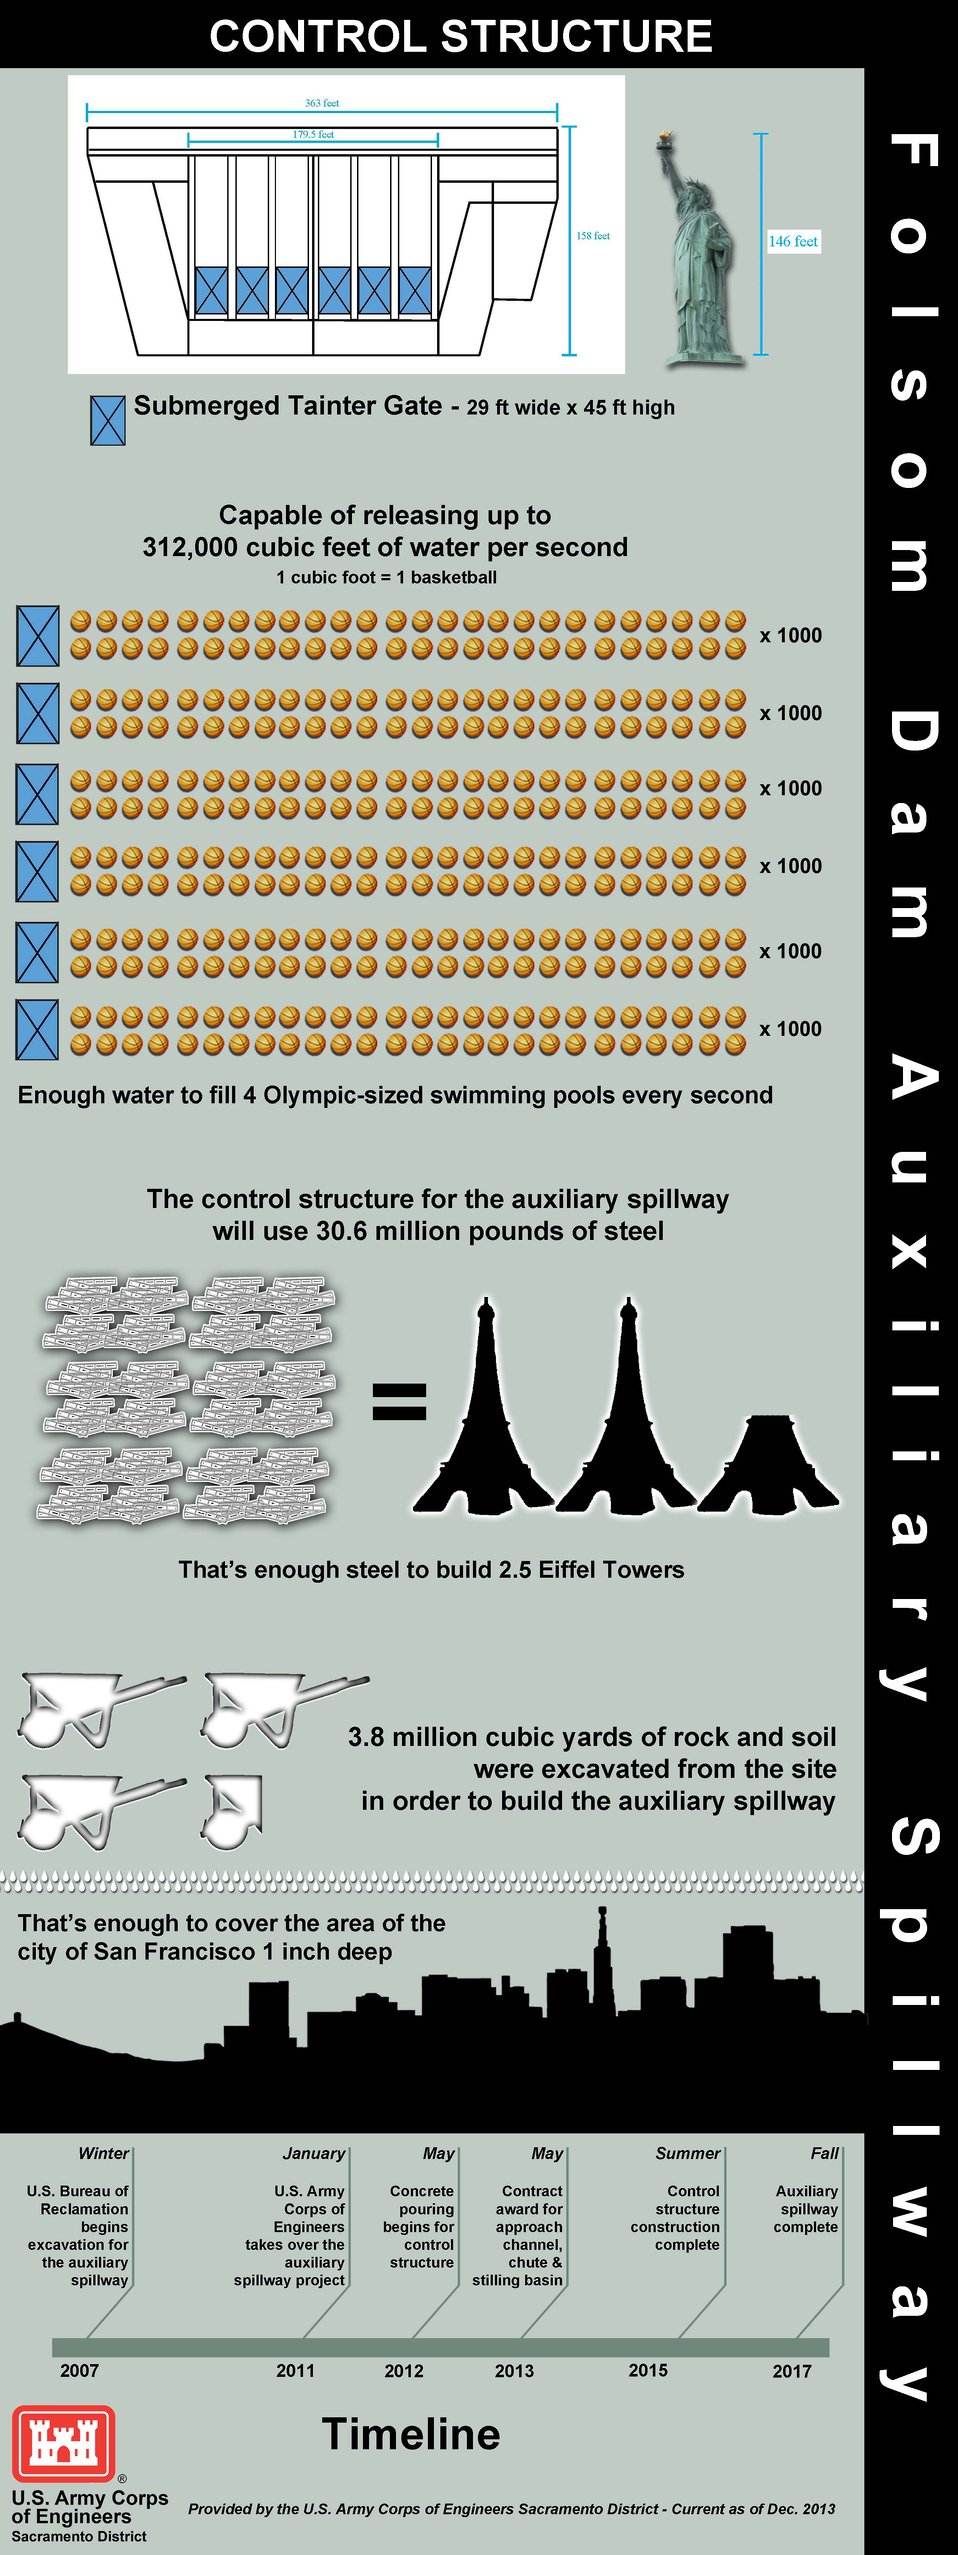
Folsom Dam auxiliary spillway infograph